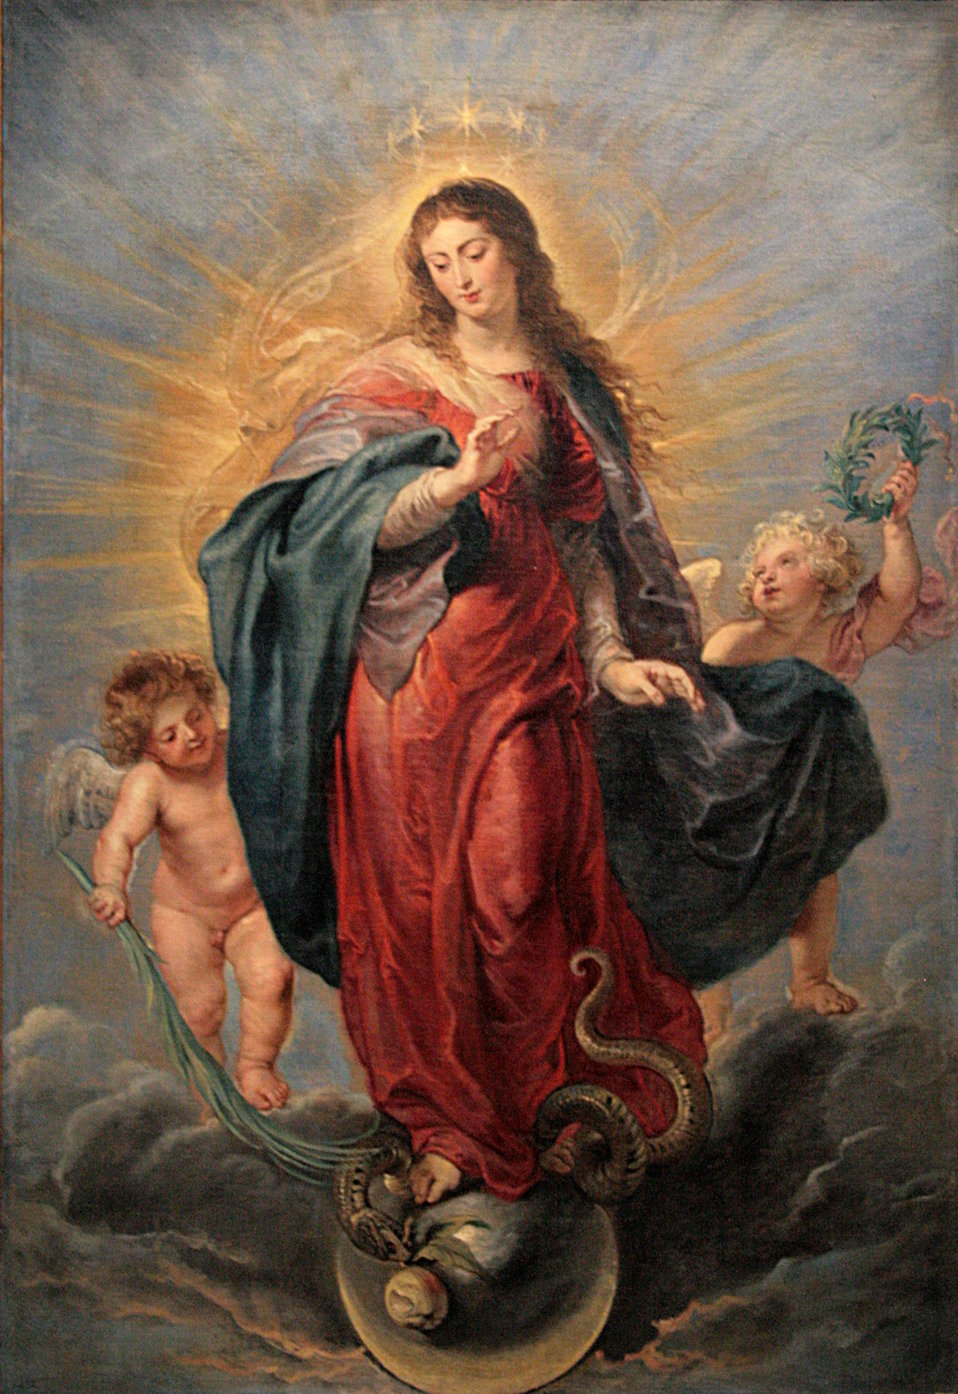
0 L'Immaculée Conception - P.P. Rubens - Prado - P1627 - (2)